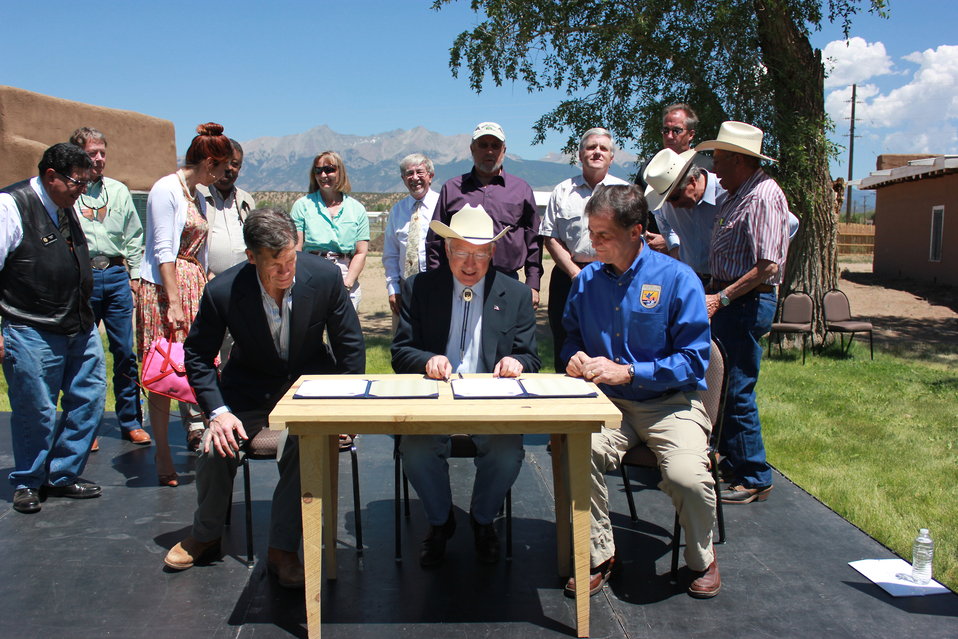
Historic Conservation Easement in Sangre de Cristo Mountains